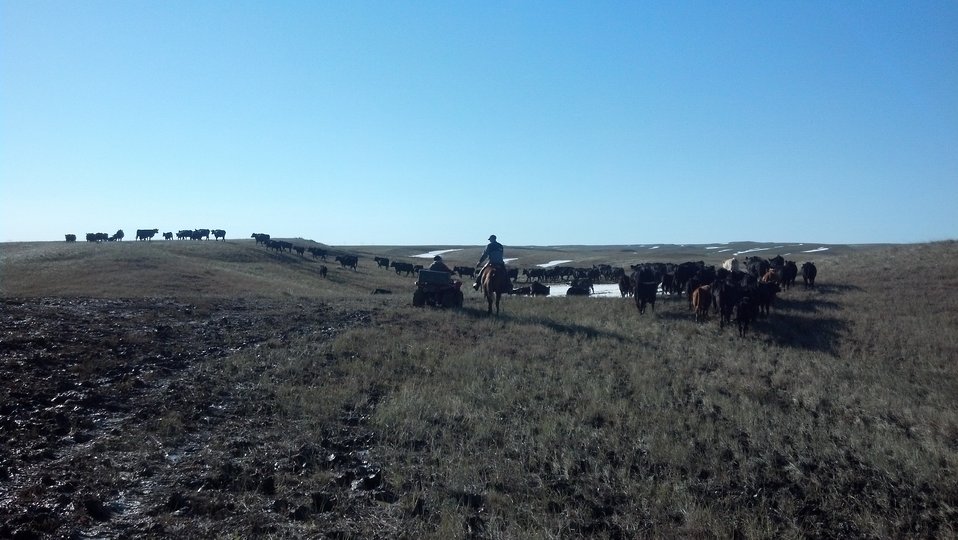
Farmers and ranchers herd cattle that survived the Atlas Blizzard in South Dakota on Oct. 12, 2013.